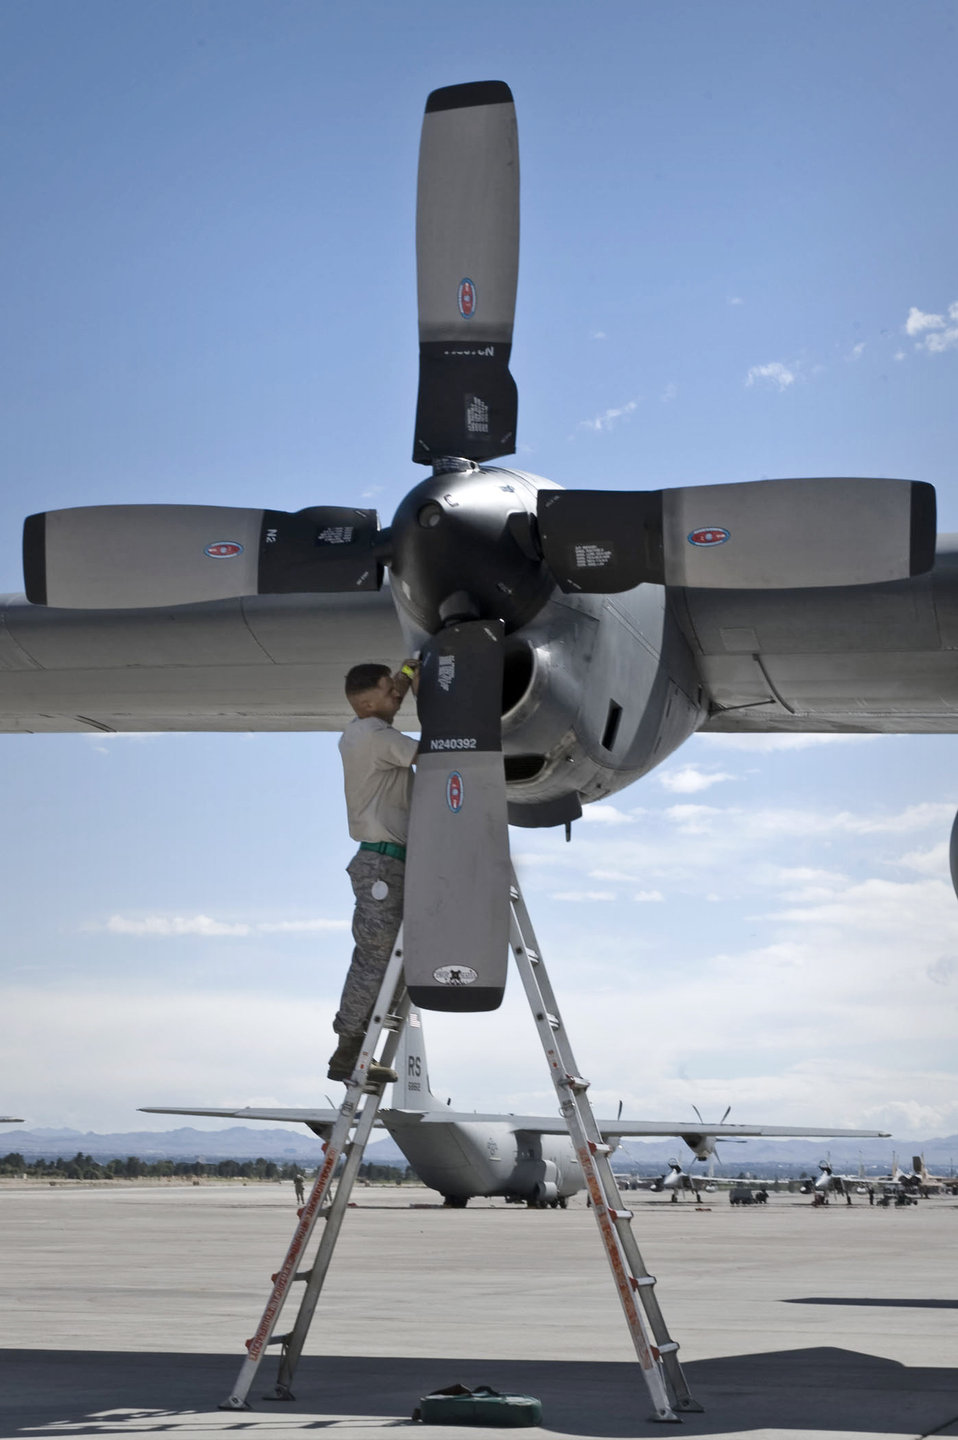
Check it out

Staff Sgt. Christopher Rhodus performs an inspection on a C-130 Hercules engine May 18, 2011, during a mobility air forces exercise at the Nevada Test and Training Range. Sergeant Rhodus is a crew chief assigned to the 19th Aircraft Maintenance Squadron at Little Rock Air Force Base, Ark.